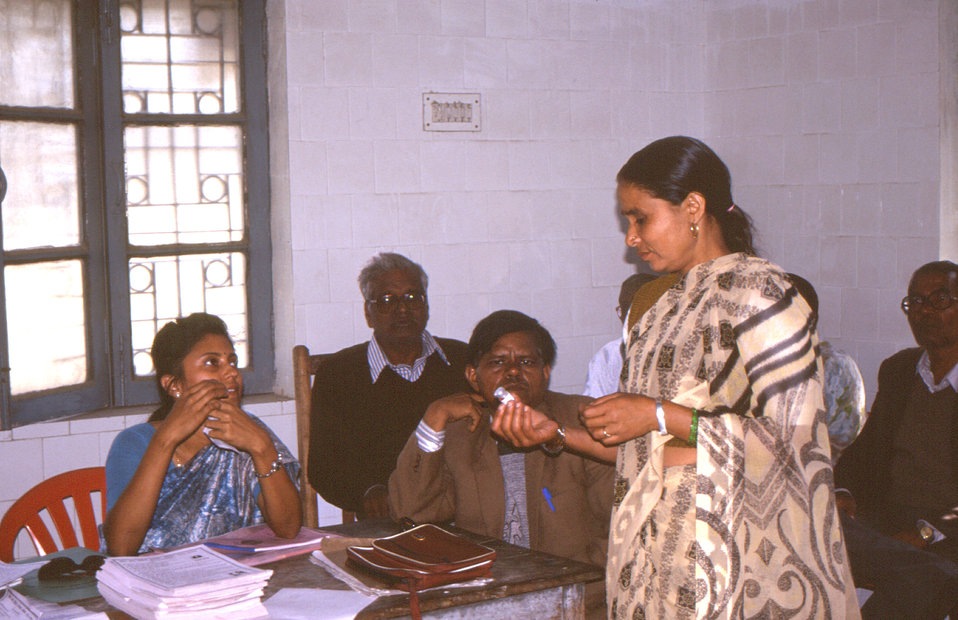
Depicted in this 2000 photograph were Indian health care workers in the country's Deoria District, as they were receiving training about the protocols associated with the STOP Transmission of Polio (STOP) immunization initiative. Since the program's inception in the fall of 1998, the STOP Teams have worked in over 50 countries. In the first years of the program, most STOP team members worked primarily to bolster acute flaccid paralysis (AFP) surveillance, support 'national immunization' days, and conduct polio case investigation and follow-up. STOP team members are recruited and trained primarily by CDC, however, once on assignment, they are under the supervision of either WHO or UNICEF.